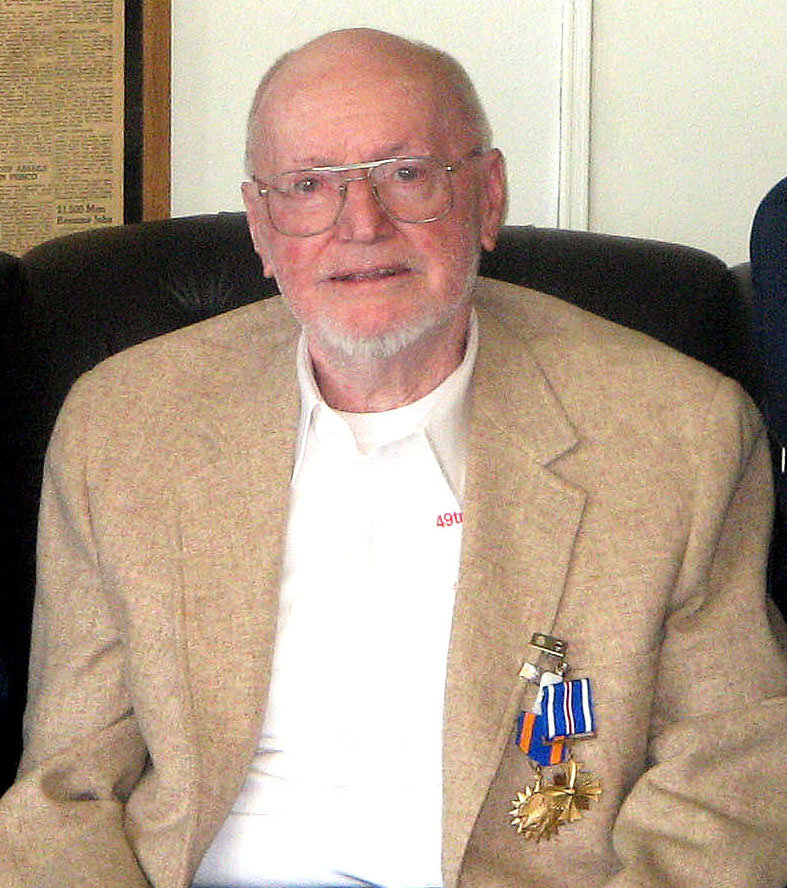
Vet.

TWO HARBORS, Minn. -- First Lt. James Costley wears his Distinguished Flying Cross and Air Medal. He was presented these medals Oct. 25 -- 60 years after his service ended in the Army Air Corps.